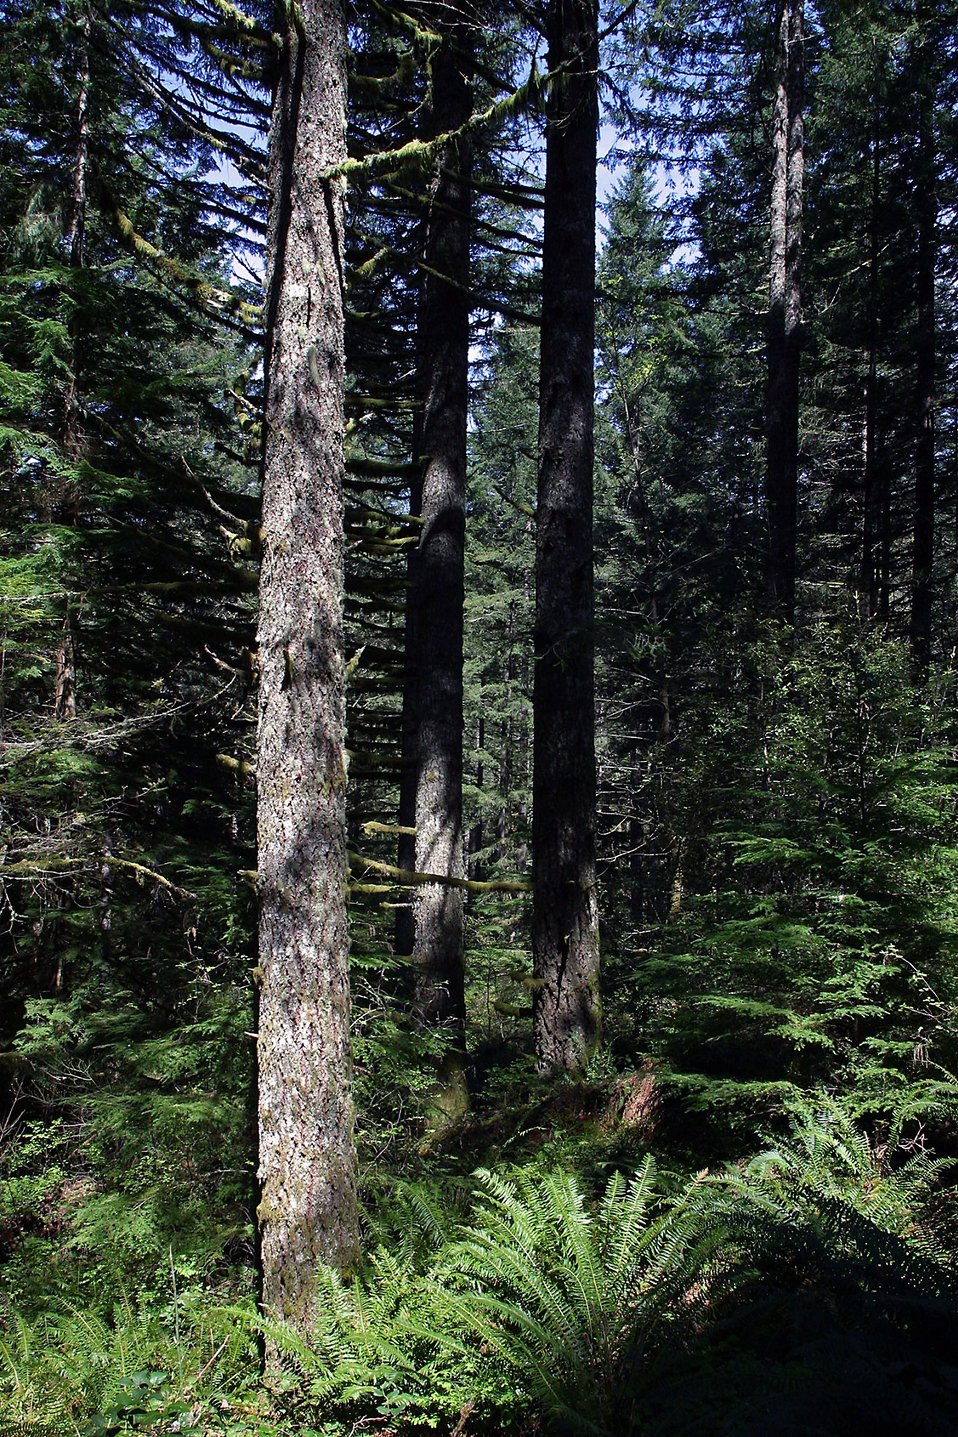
BLM forest lands in the Santiam watershed.